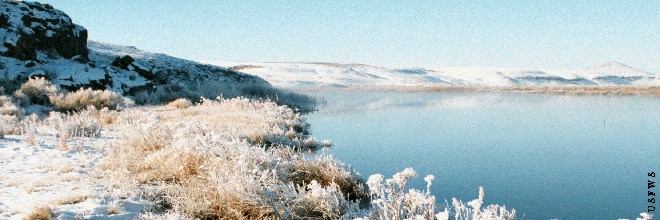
Malheur NWR